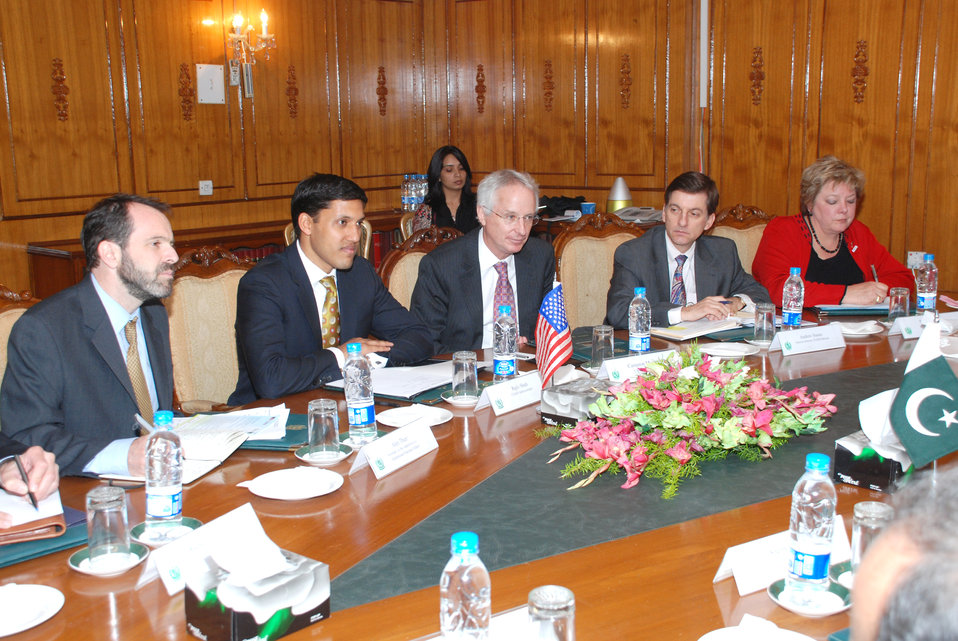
US officials Meeting with Minister of Foreign Affairs, Assistance to Pakistan Remains Strong at Islamabad on April 14, 2012